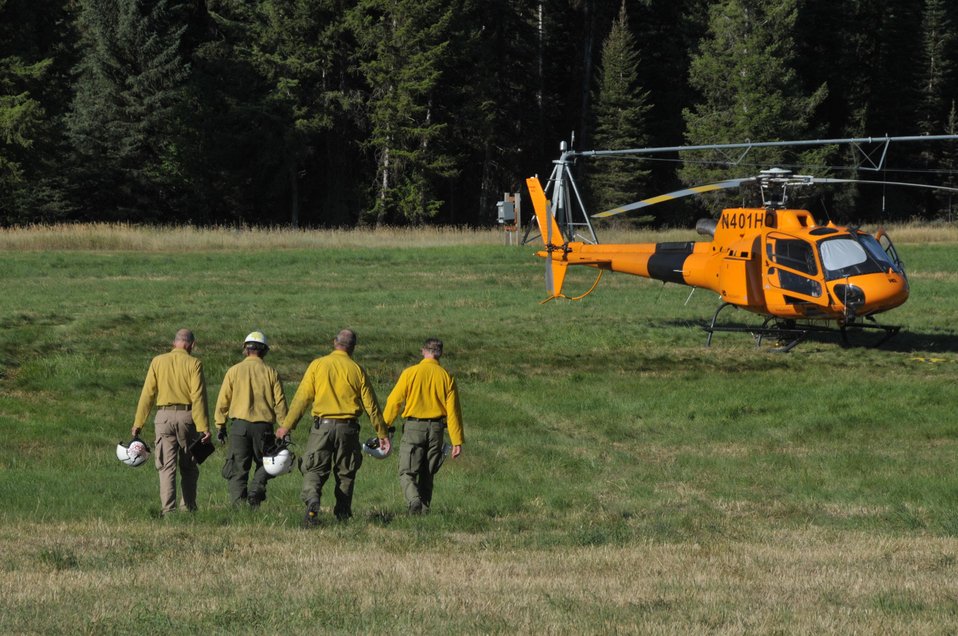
Incident Commander and Operations Section Chiefs prepare for morning reconnaissance flight over the Gold Pan Fire. The Gold Pan Fire in the Bitterroot National Forest near Conner, MT began by lightning on Jul. 16, 2013 by lighting have consumed approximately 16,412 acres.